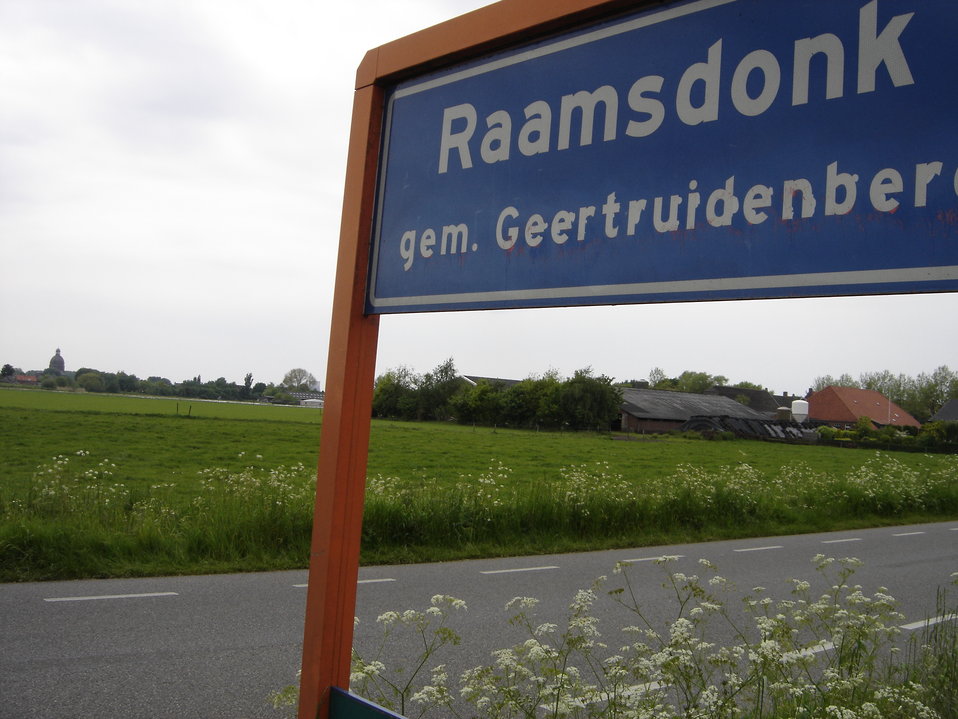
Nederlands: Raamsdonk plaatsnaambord. Eigen foto door Sjors van der Giessen.